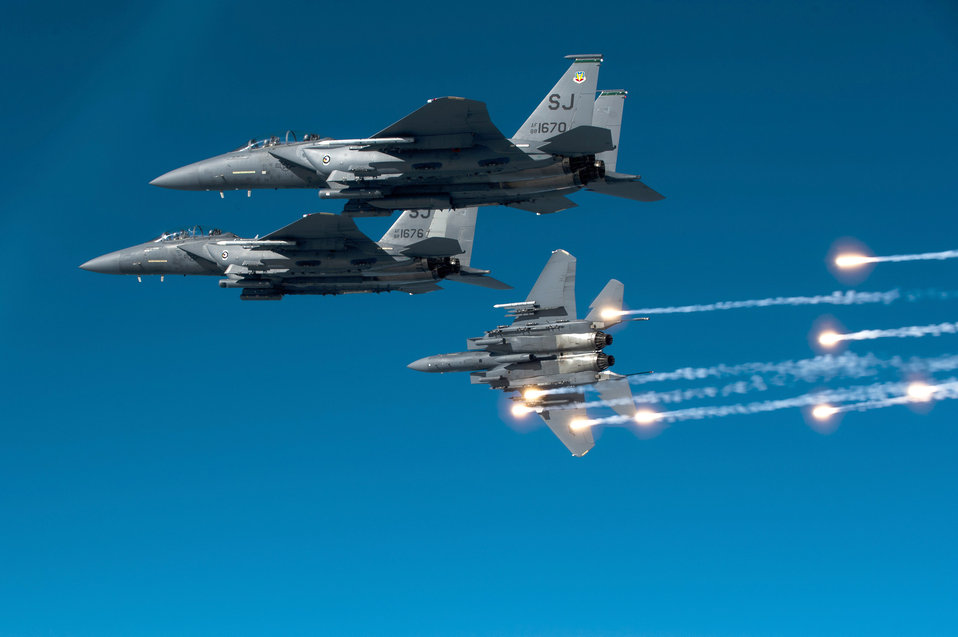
Light up the sky

An F-15E Strike Eagle releases flares during a local training mission over North Carolina, Dec. 17, 2010. The three Strike Eagles are assigned to the 335th Fighter Squadron at Seymour Johnson Air Force Base, N.C.